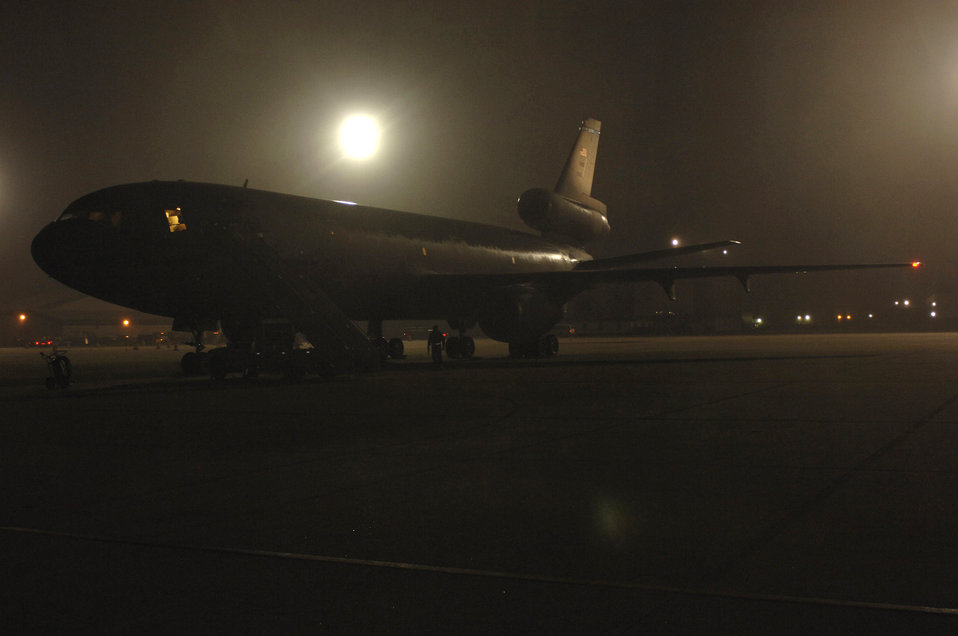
Pakistan Earthquake Release

LANGLEY AIR FORCE BASE, Va. -- A KC-10 from McGuire Air Force Base, NJ, sits on the runway waiting to take off, after being loaded here with supplies for the Earthquake Release mission in Pakistan on Oct. 11.